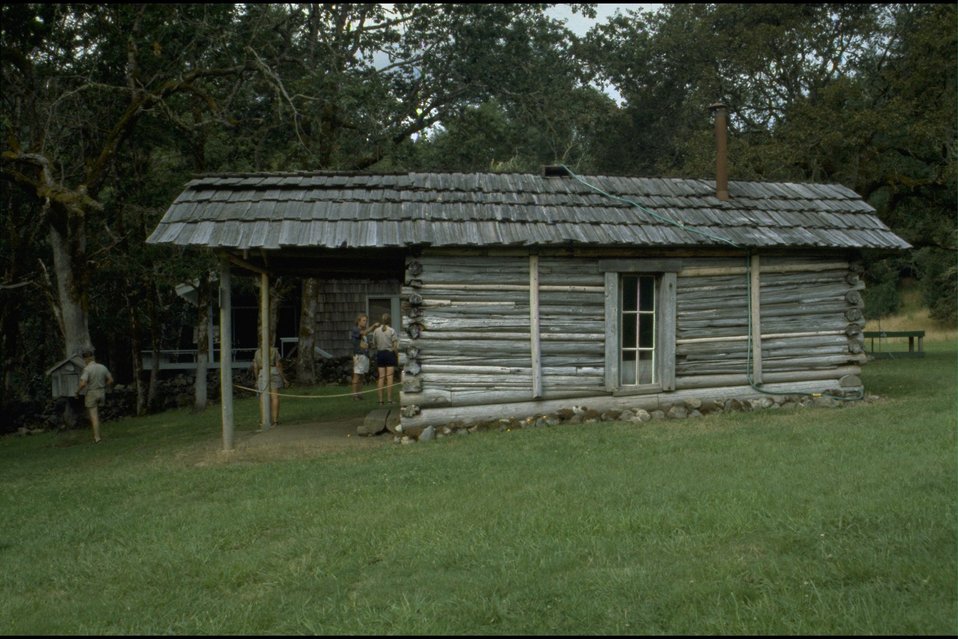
Rogue River - Winkle Bar. Zane Grey's Cabin (up river side).